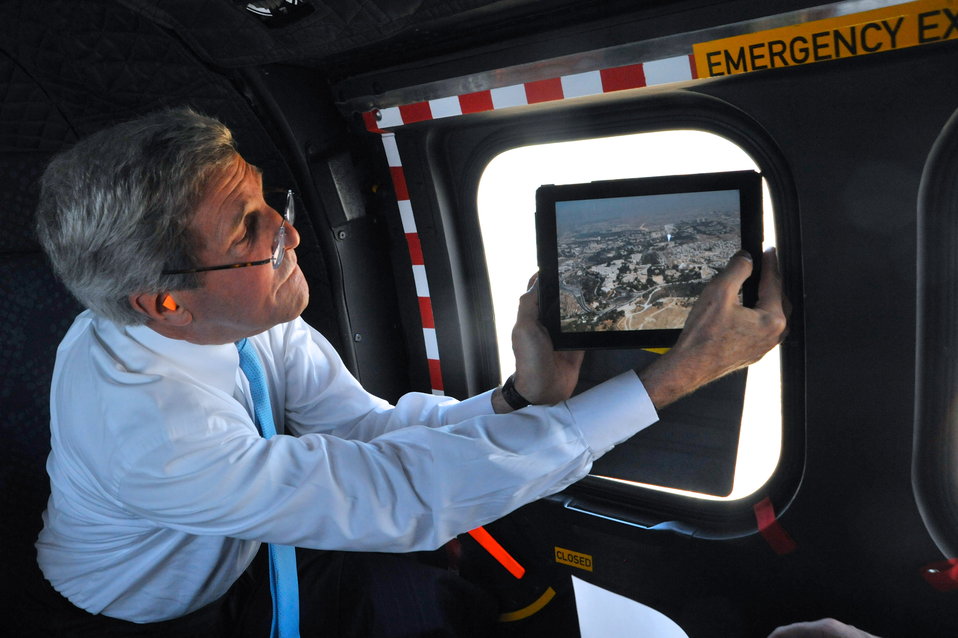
Secretary Kerry Photographs the Dome of the Rock

U.S. Secretary of State John Kerry photographs the Dome of the Rock after a helicopter carrying him to Amman, Jordan, took off from Jerusalem on June 29, 2013.